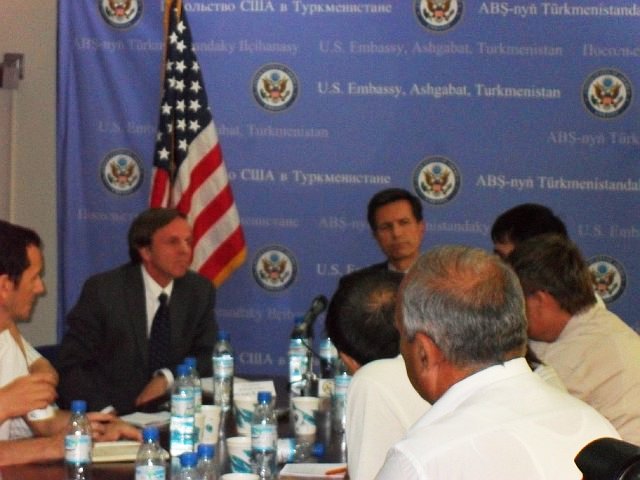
Assistant Secretary Blake Participates in the U.S.-Turkmenistan Business Council

U.S. Assistant Secretary of State for South and Central Asian Affairs Robert O. Blake, accompanied by U.S. Assistant Secretary for Democracy, Human Rights and Labor Michael Posner and Director for Central Asia at the National Security Council, Kurt Donnelly, participates in the U.S.-Turkmenistan Business Council in Ashgabat, Turkmenistan, on June 16, 2010.